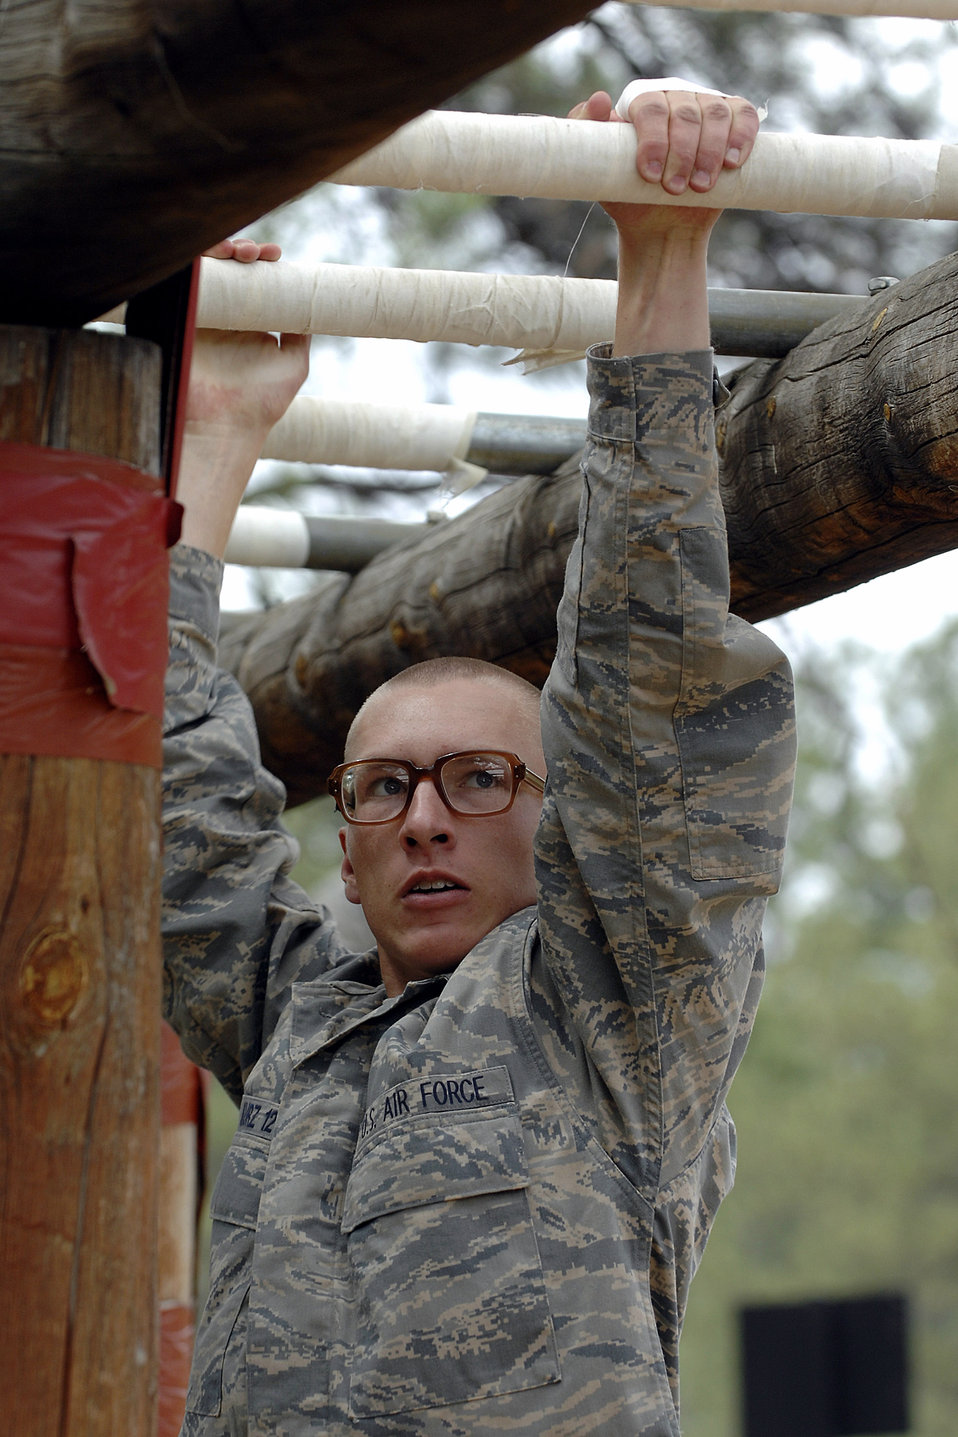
Confidence course

U.S. Air Force Academy basic cadet Jeremy Curz traverses the confidence course in the Jacks Valley training area July 15 during the field training portion of basic training.